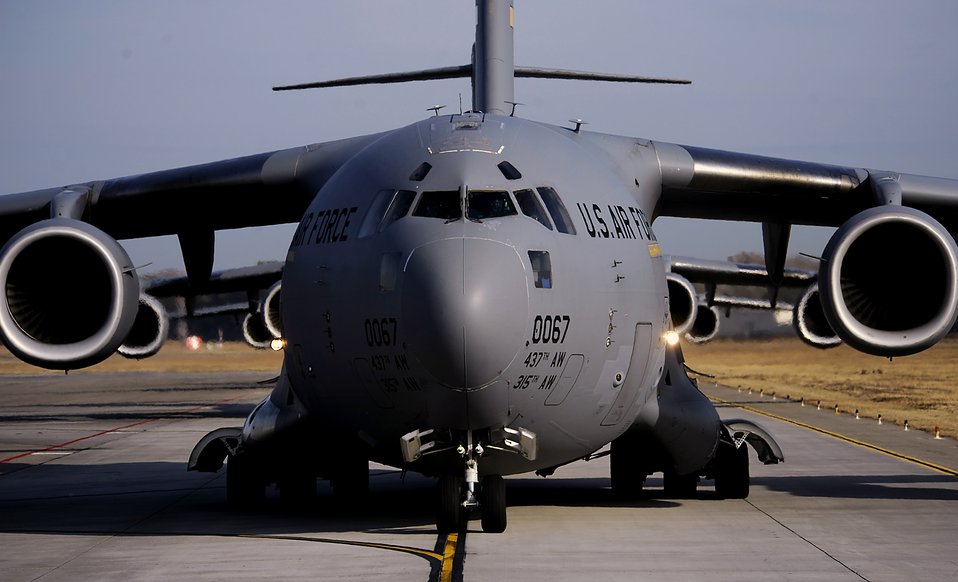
Airmen to deliver peacekeeping equipment to Darfur

Airmen and C-17 Globemaster IIIs are scheduled to airlift equipment from Rwanda into the Darfur region of Sudan in support of a U.S. Africa Command-led operation to aid United Nations and African Union peacekeeping missions.